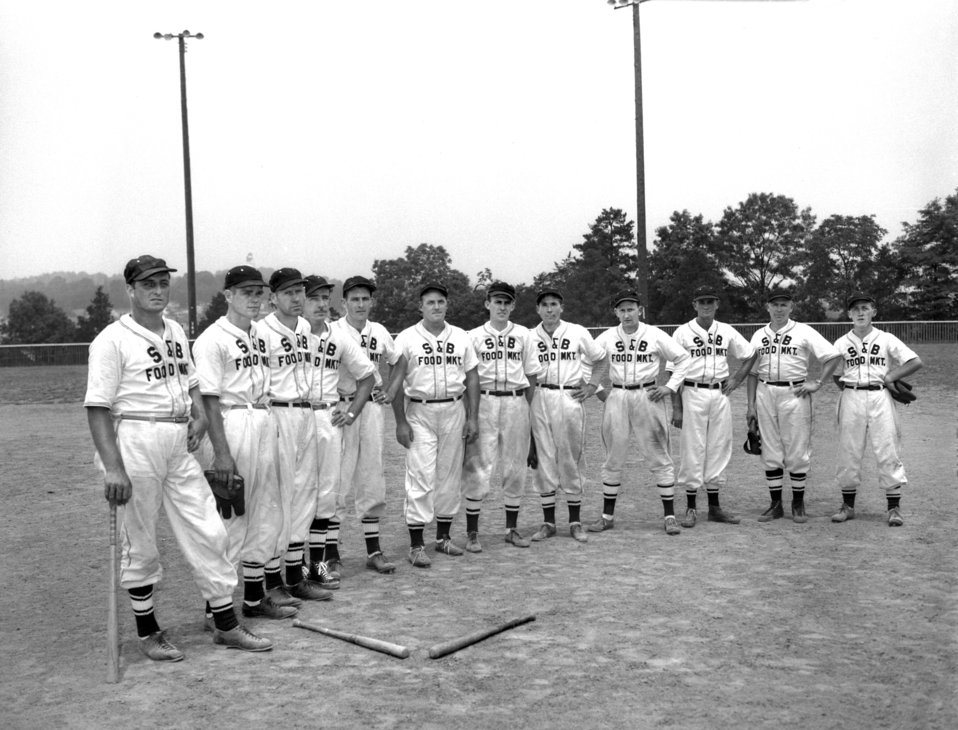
SandB Softball Team Oak Ridge

005061a DOE photo by Ed Westcott

S&B Food Market Softball Team Oak Ridge Tennessee 6/7/1948